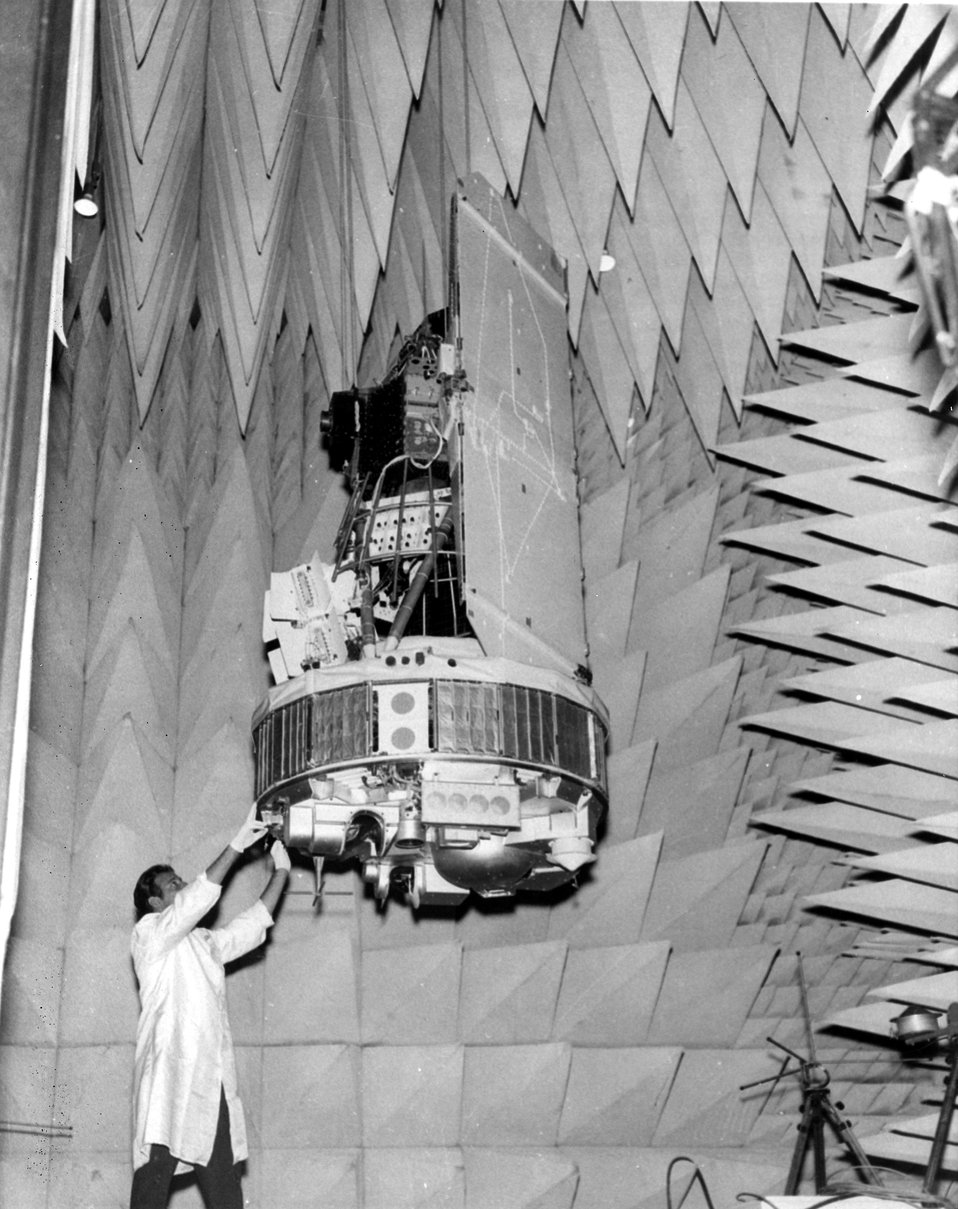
Engineering model of Nimbus B spacecraft undergoes radio frequency interference tests in an anechoic chamber at GE's Valley Forge, Pennsylvania, facility.